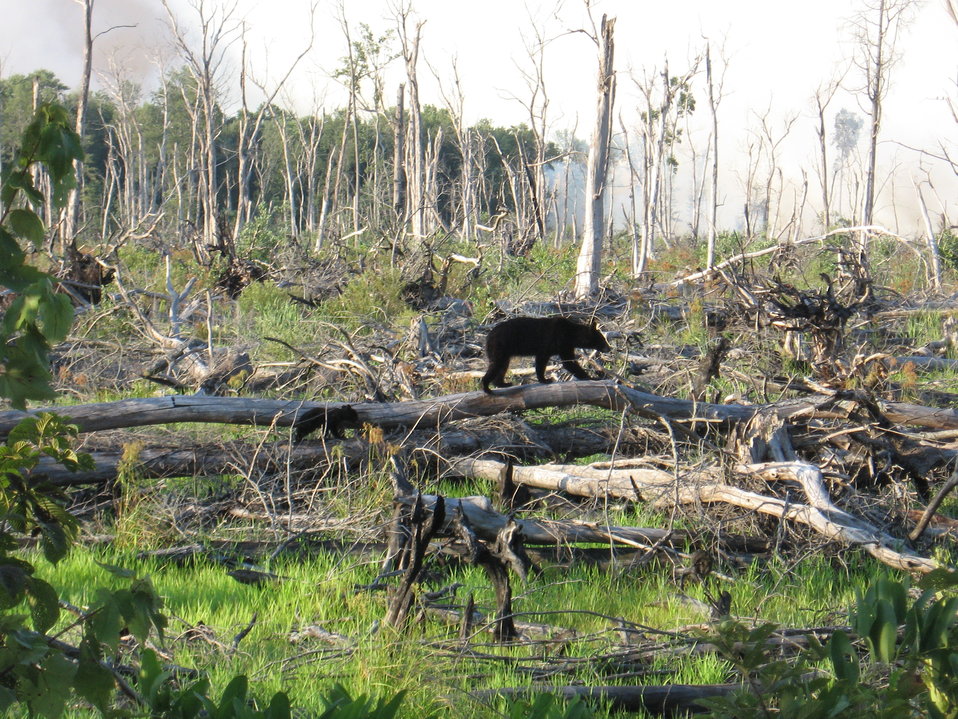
Bears at Lateral West Fire

Suffolk, VA, August 2011: A black bear and her cub travel along the edge of the Lateral West Fire burning on Great Dismal Swamp National Wildlife Refuge. Firefighters reported bears and their cubs watching fire operations.